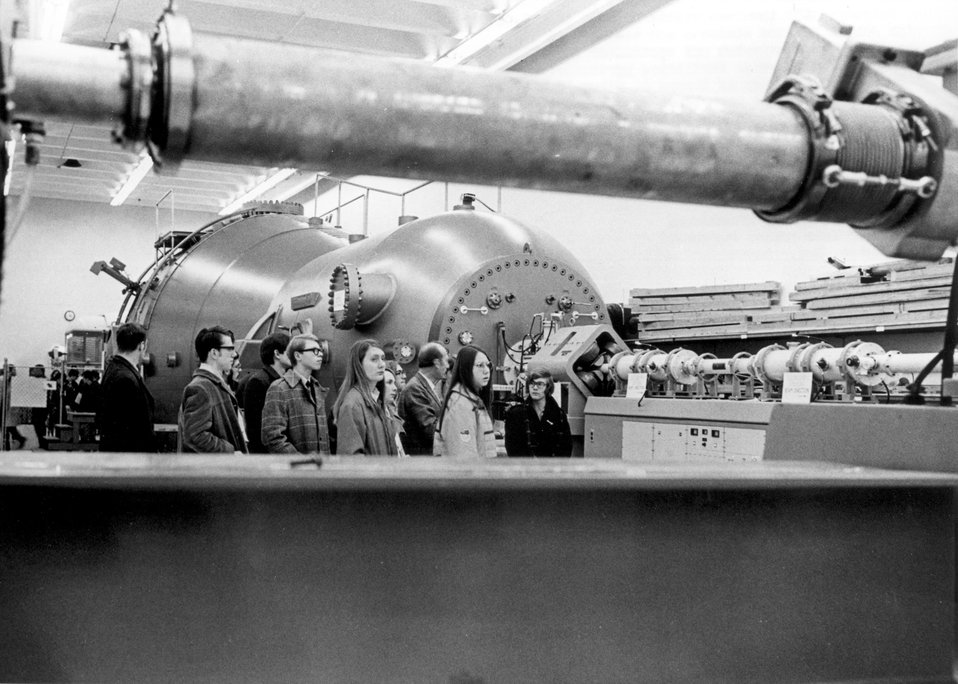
Science Youth Day participation in February 1971 involved visits by more than 7,000 high school science students and teachers. c. 1972